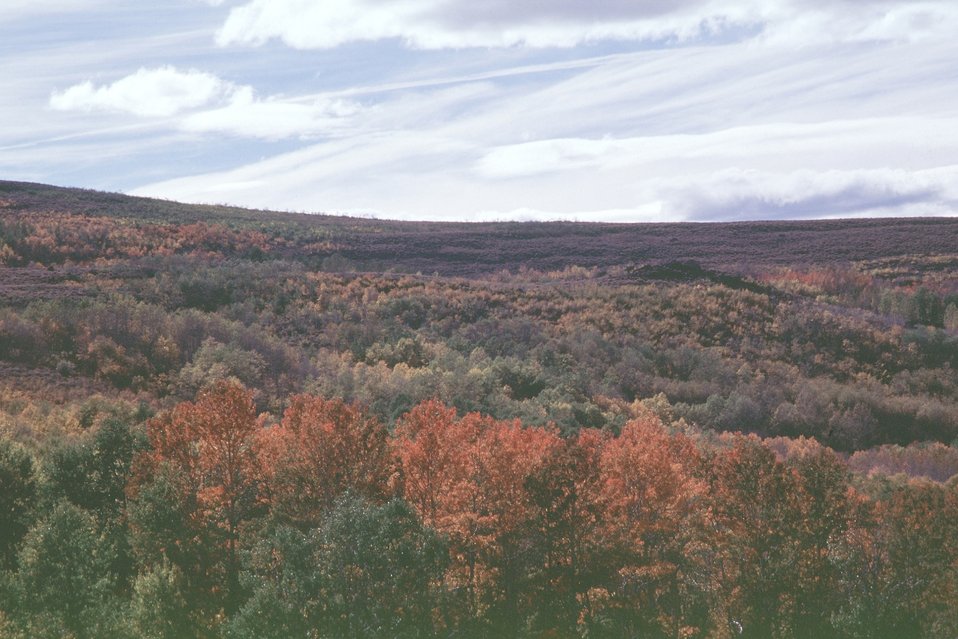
Aspens at Jackman Park, Steen's Mountain.